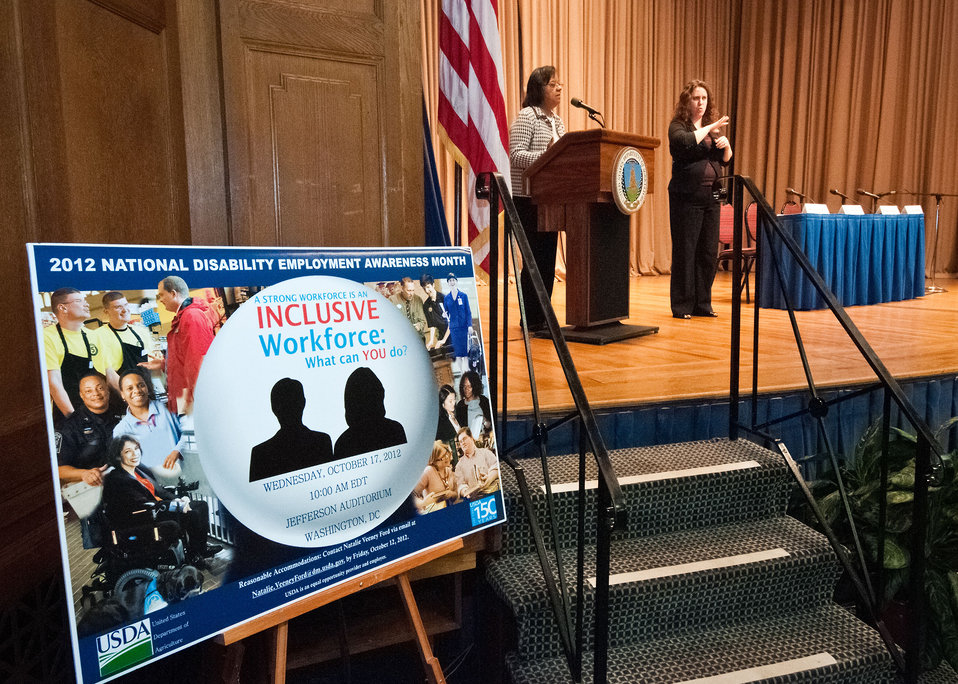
Council of Sate Administrators of Vocational Rehabilitation Deputy Director Rita Martin speaks at the U.S. Department of Agriculture (USDA) 2012 National Disability Employment Awareness Month celebration in the Jefferson Auditorium at USDA in Washington, D.C. on Wednesday, Oct. 17, 2012. The theme for the event was, “A Strong Workforce is an Inclusive Workforce: What Can You Do?